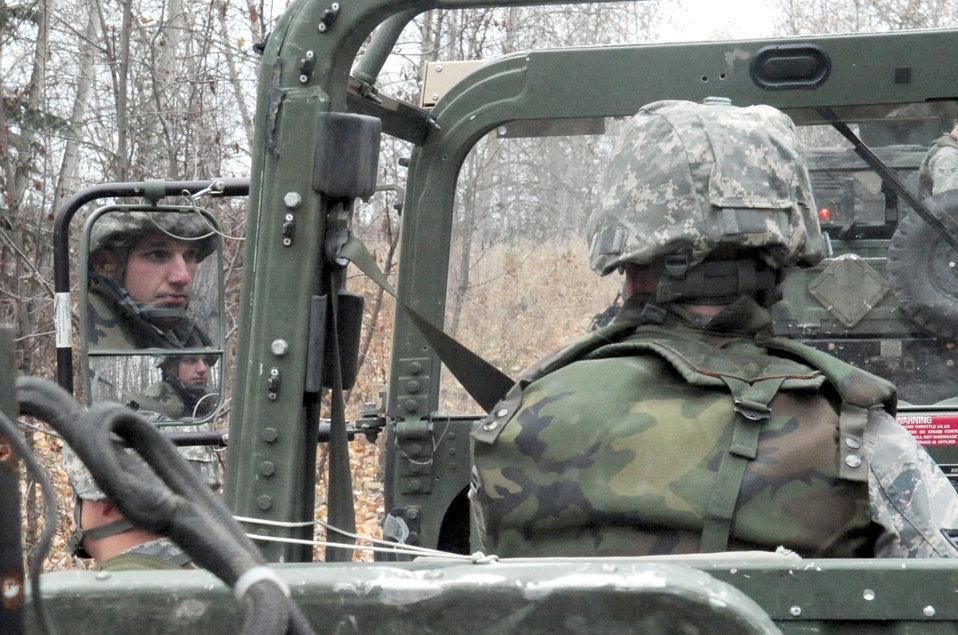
Combat skills training

An Airman holds his position during a mock convoy Oct. 7, 2010, at Eielson Air Force Base, Alaska. Airmen with the 354th Civil Engineer Squadron Explosive Disposal Flight conduct the class to prepare for deployment.